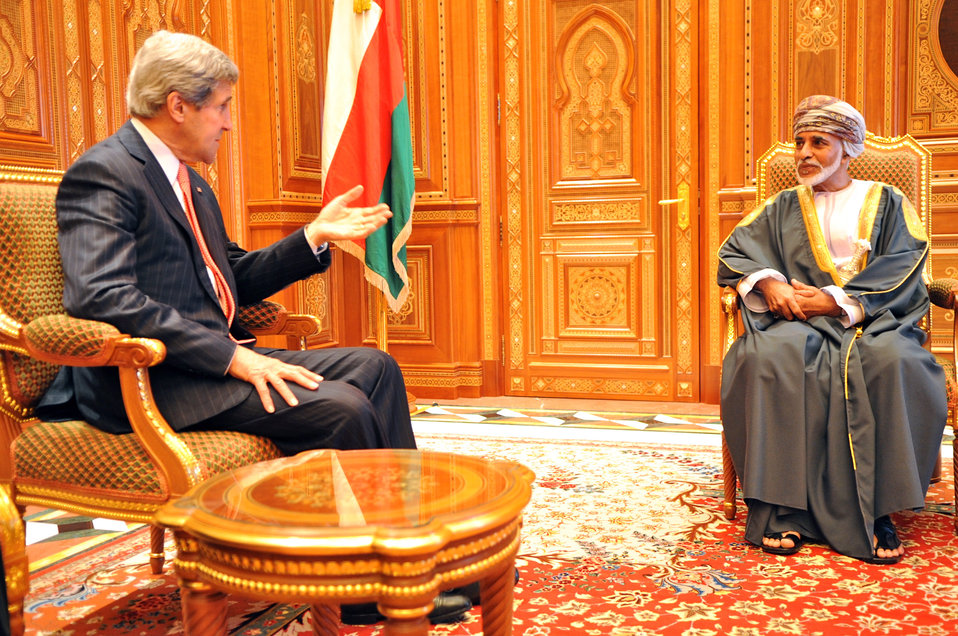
Secretary Kerry Meets With Omani Sultan Qaboos bin Said Al Said

U.S. Secretary of State John Kerry meets with Sultan of Oman Qaboos bin Said Al Said in Muscat, Oman, on May 21, 2013.